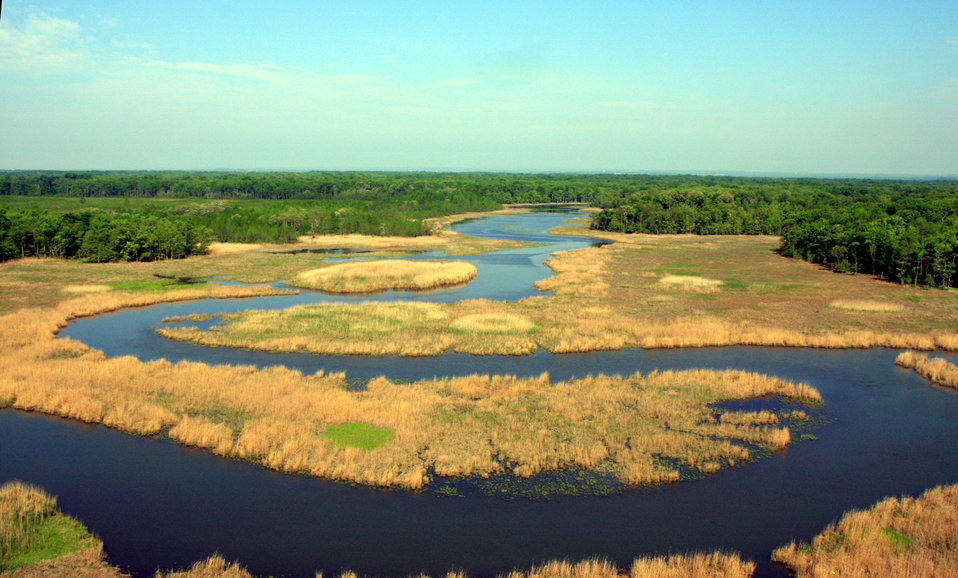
Aerial view of forest, river and marsh

Aerial view of important bald eagle habitat near Aberdeen Proving Ground